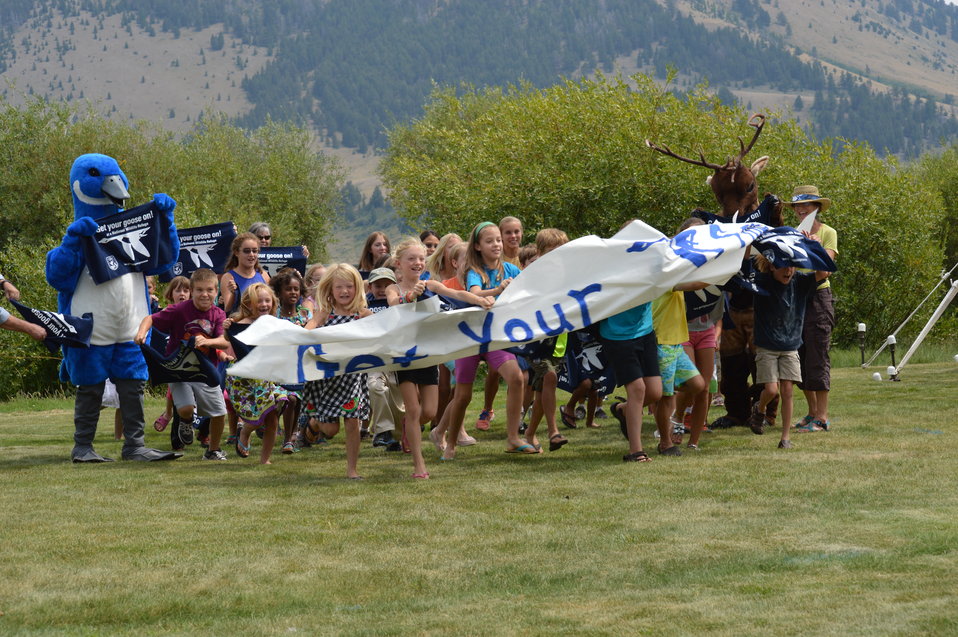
Get Your Goose On! - National Elk Refuge Style

On August 10, 2012 the U.S. Fish and Wildlife Service and Partners celebrated the 100 year anniversary of the establishment of the National Elk Refuge. In these photos, young attendees, along with Puddles the Blue Goose and the National Elk Refuge's mascot, showed us how to Get Your Goose On! with style.